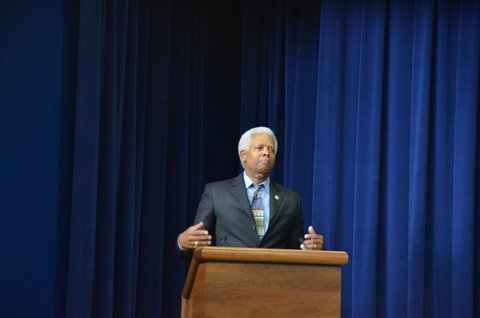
Rep. Hank Johnson

WH 2012 World Hepatitis Day Event